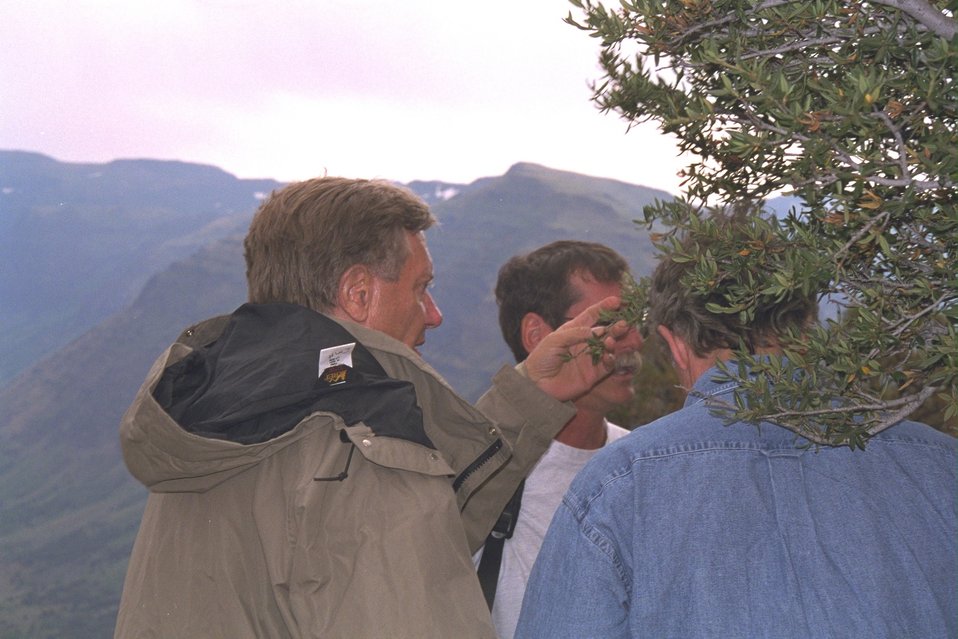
Secretary Babbitt and Governor Kitzhaber discuss Mountain Mohogany plant with Rick Hall, a Burns District botanist, above Big Indian Gorge.